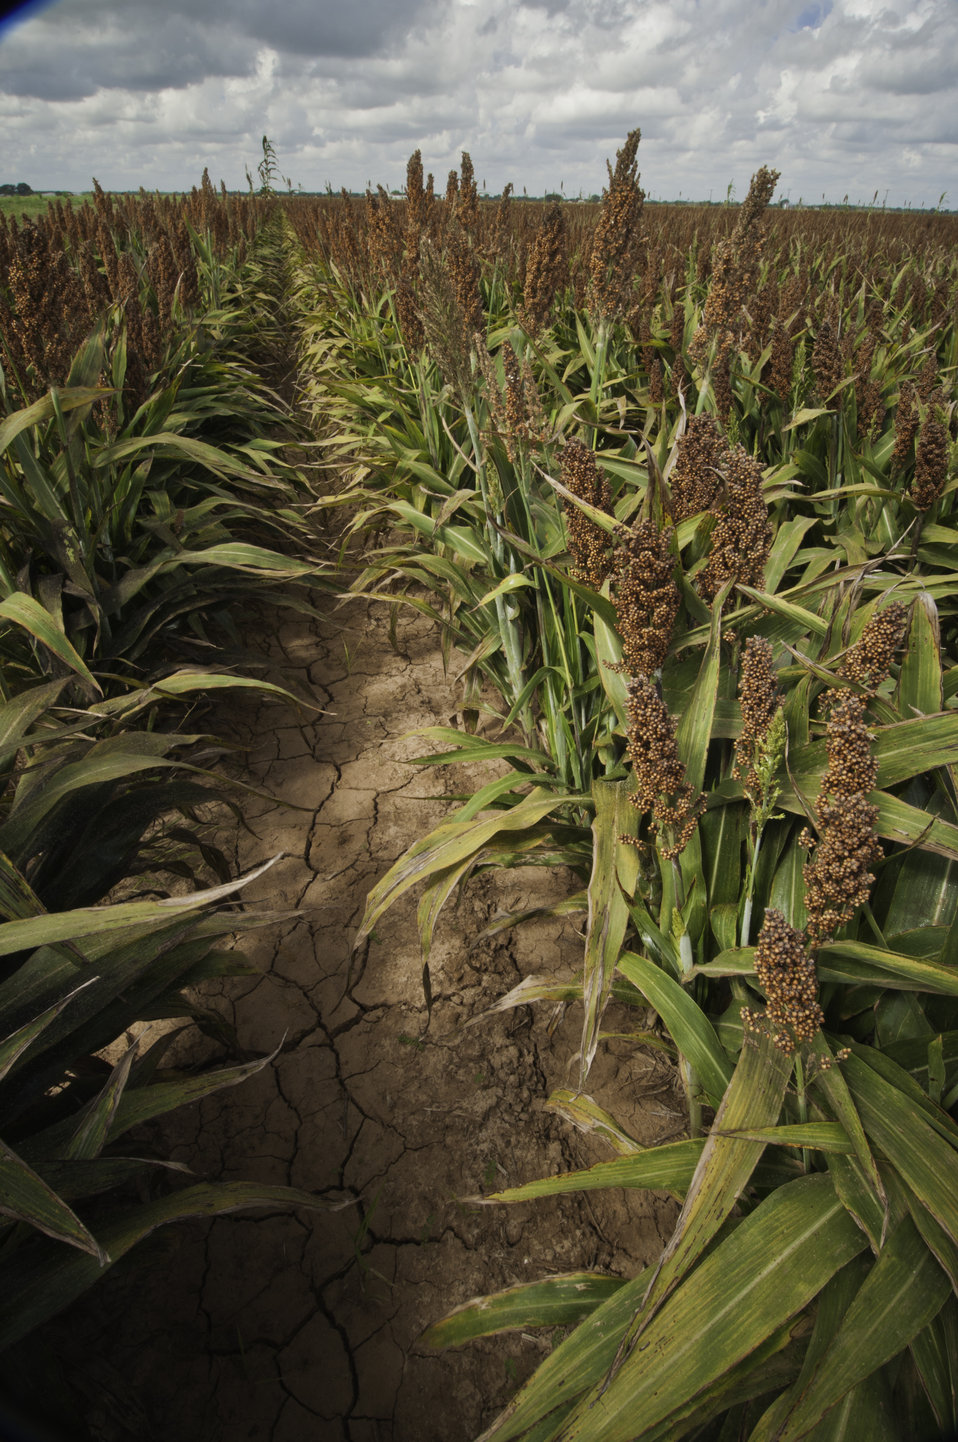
Grain sorghum grows on the Wilder Farms Navasota, TX on Aug. 23, 2013. The ground shows signs of the Texas drought but the crop shows no ill affects from the drought USDA photo by Bob Nichols.